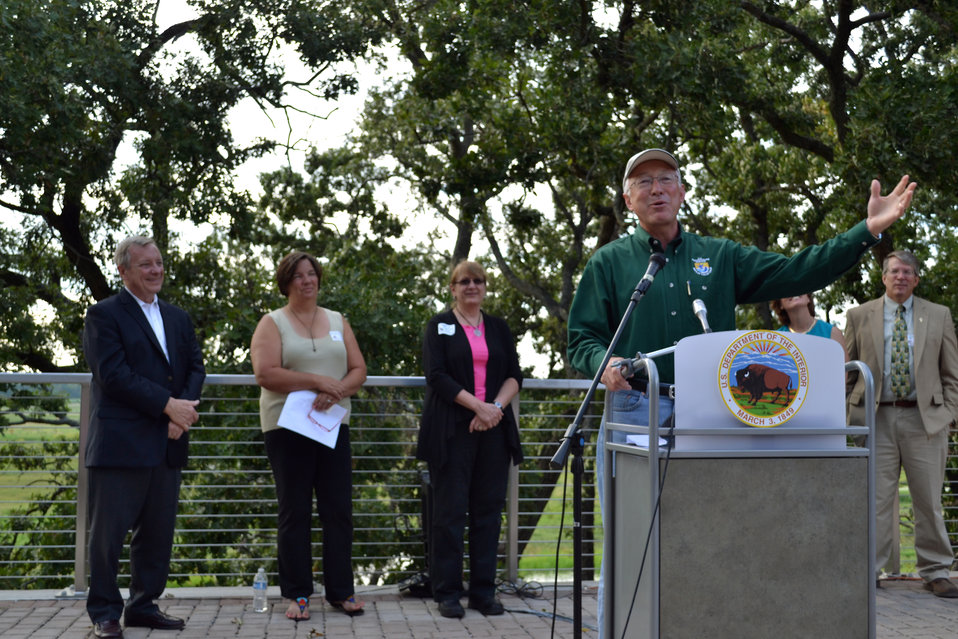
Announcing Hackmatack

Secretary of the Interior Ken Salazar announced that he has authorized the establishment of Hackmatack National Wildlife Refuge in southeastern Wisconsin and northeastern Illinois, eventually providing up to 11,200 acres of habitat for wildlife as well as outdoor recreational opportunities within easy driving distance of millions of people.